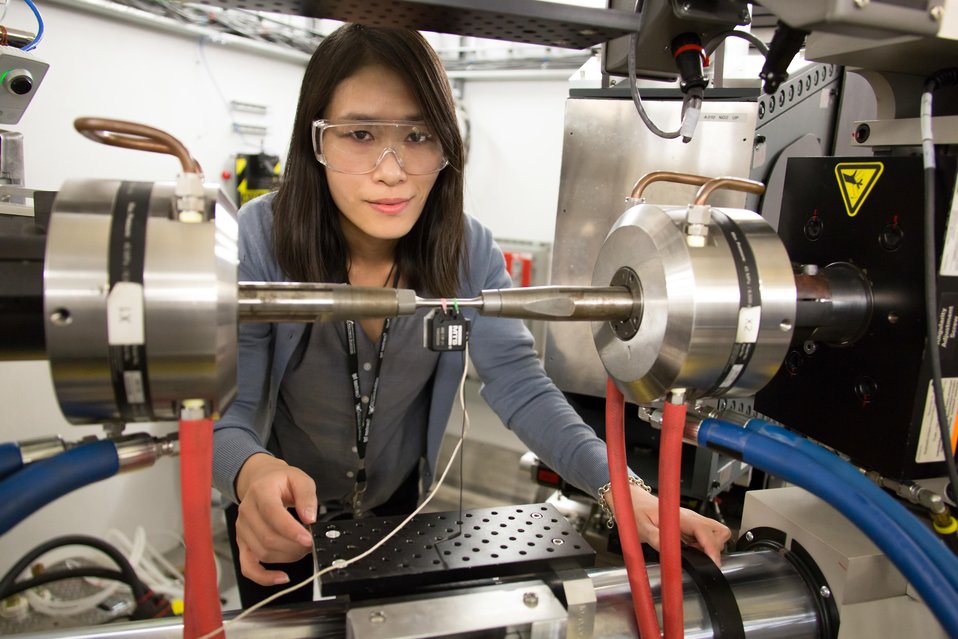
AT OAK RIDGE NATIONAL LABORATORY, VULCAN USER FROM HITACHI AMERICA, LTD., IS STUDYING DEFORMATION OF MARTENSITIC STEEL.